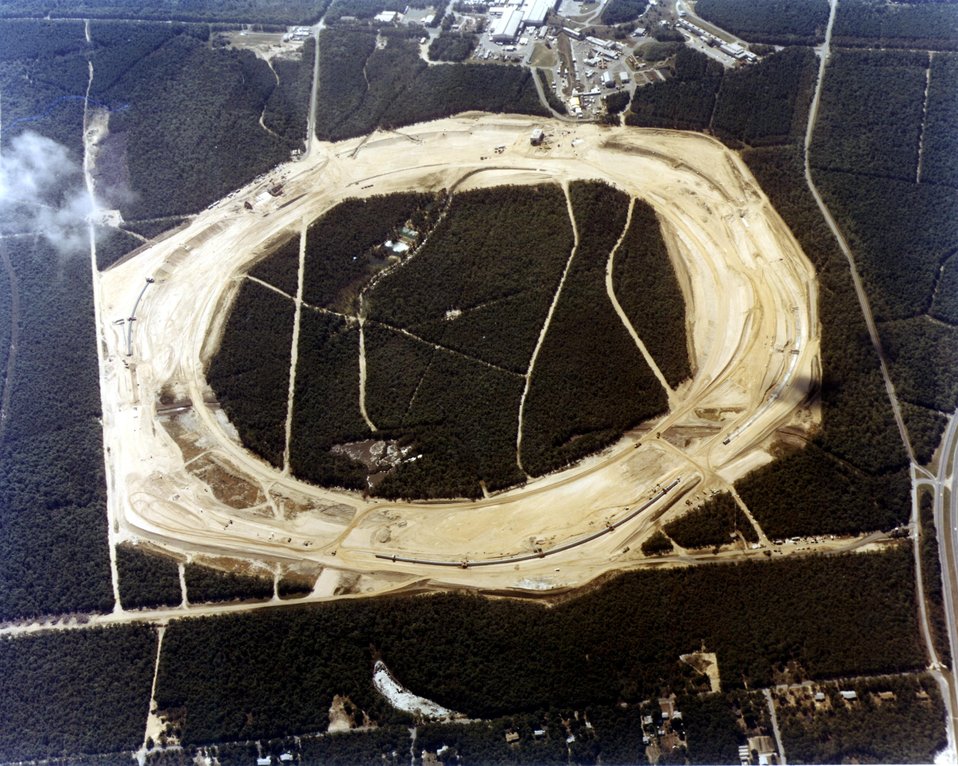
CBA IS A PROTON-PROTON COLLIDING BEAM ACCELERATOR WHICH IS BEING BUILT TO STUDY THE BASIC STRUCTURE OF ENERGY AND MATTER. THE FACILITY ITSELF IS AN UNDERGROUND CIRCULAR TUNNEL, WHICH IS 3.8 KILOMETERS IN CIRCUMFERENCE. TWO RINGS OF SUPERCONDUCTING MAGNETS WILL BE INSIDE THE TUNNEL. PRO- TON BEAMS WILL BE INJECTED INTO THE TUNNEL AND ACCELERATED TO ENERGIES UP TO 400 GEV. AT SIX PLACES ALONG THE TUNNEL, THE BEAMS WILL COLLIDE. EXPERIMENTAL HALLS, WHICH ENCLOSE THESE 6 INTERSECTIONS, WILL HOUSE EQUIPMENT FOR STUDYING THE RESULTS OF THE COLLISIONS.